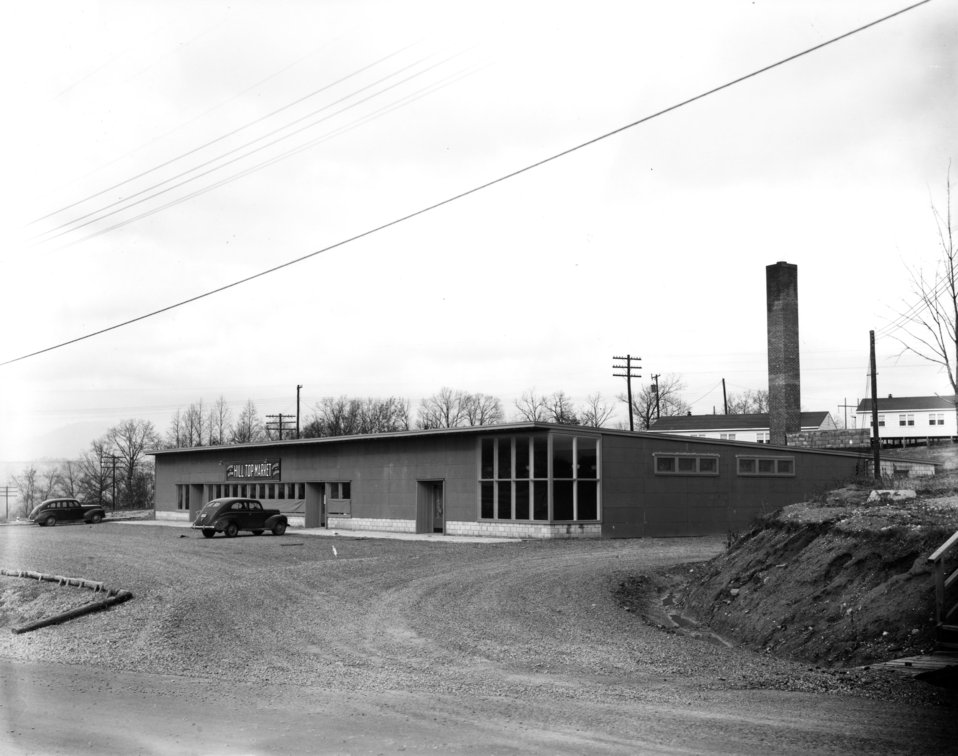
Business activity at Oak Ridge